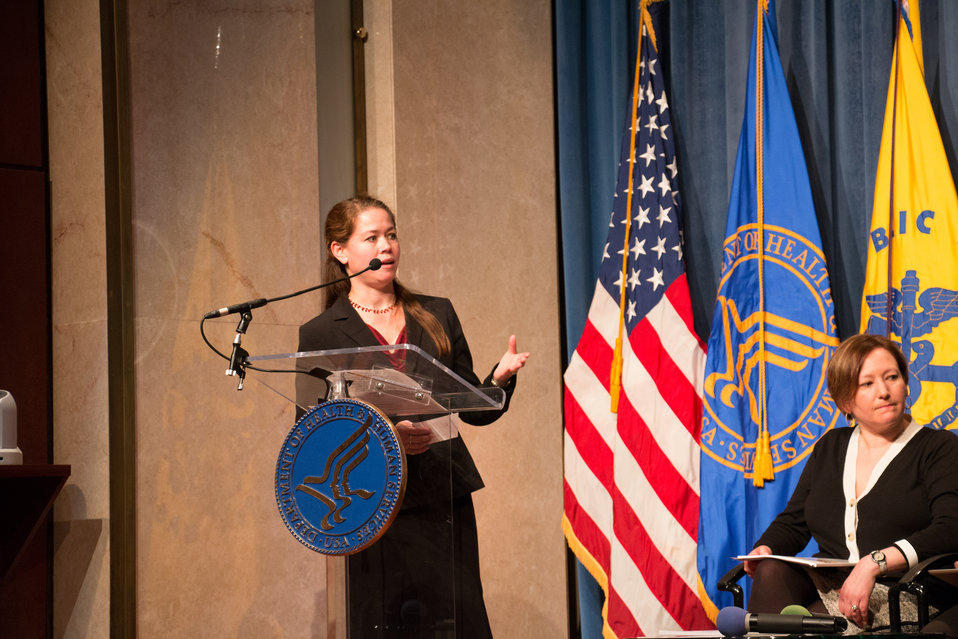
VHAP Launch (301 of 511)